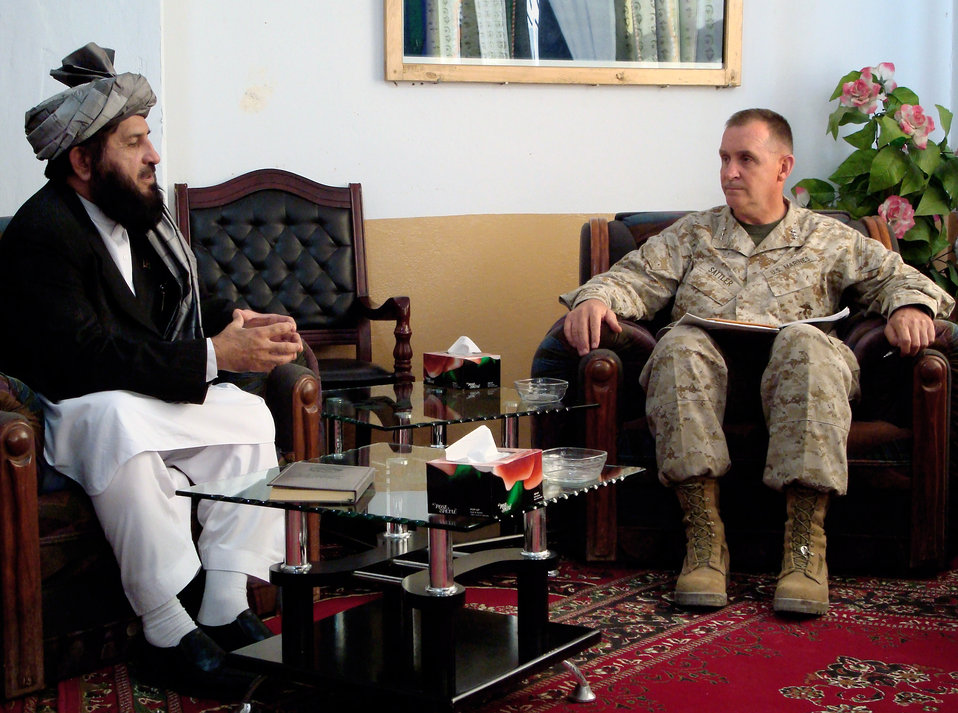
Joint Chiefs officials meet with Afghan leaders

Zabul Province Governor Delbar Jan Arman meets with Marine Lt. Gen. John Sattler Oct. 9 in Qalat, Afghanistan, on the sixth anniversary of the U.S.-led invasion against the Taliban. General Sattler is the Joint Chiefs Strategic Plans and Policy director.